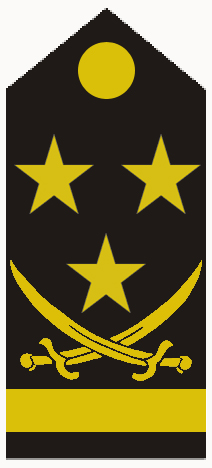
Marshal